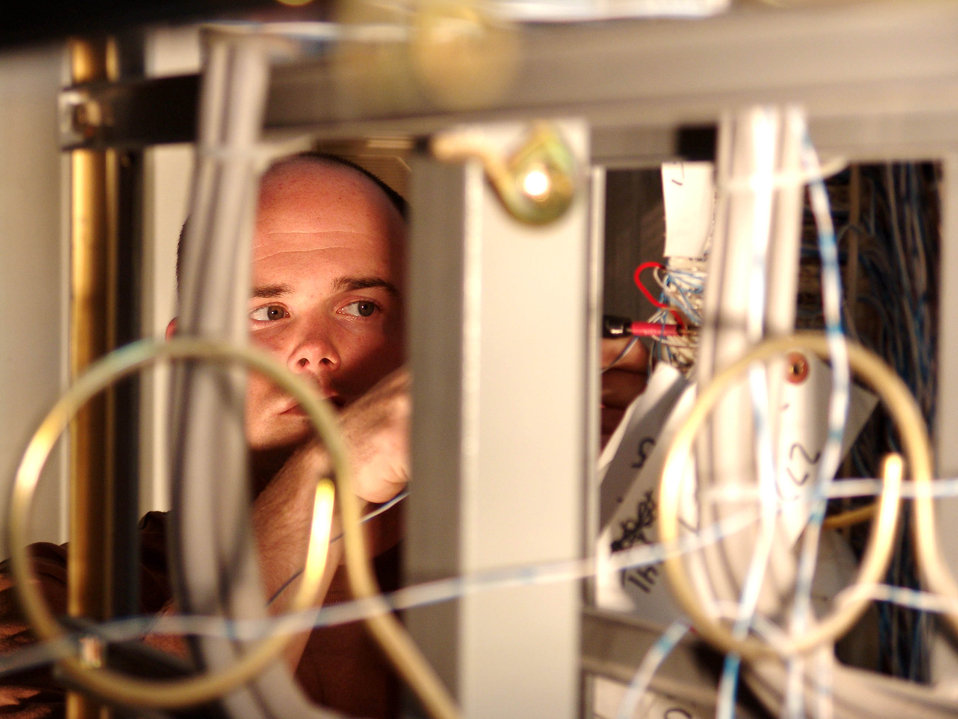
All wired up

SOUTHWEST ASIA -- Staff Sgt. Jeffrey Thorpe terminates a telephone line during a defense switched network service upgrade at a forward-deployed location. The 386th Expeditionary Communications Squadron’s Airmen manually programmed and wired all mission-critical phone lines into a temporary telephone switch to provide DSN access throughout the critical 24-hour upgrade procedure.